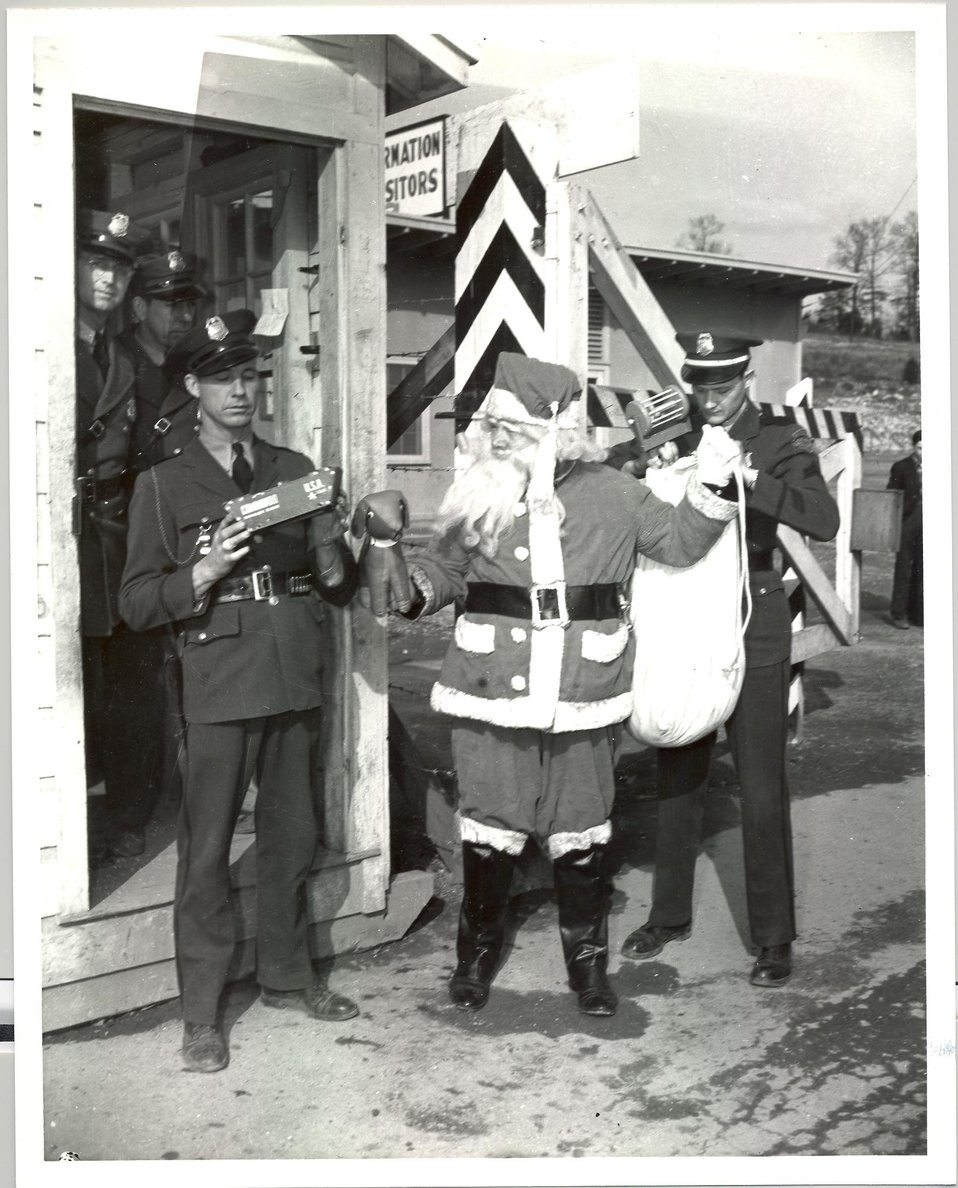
Santa Claus at Elza Gate Guard House